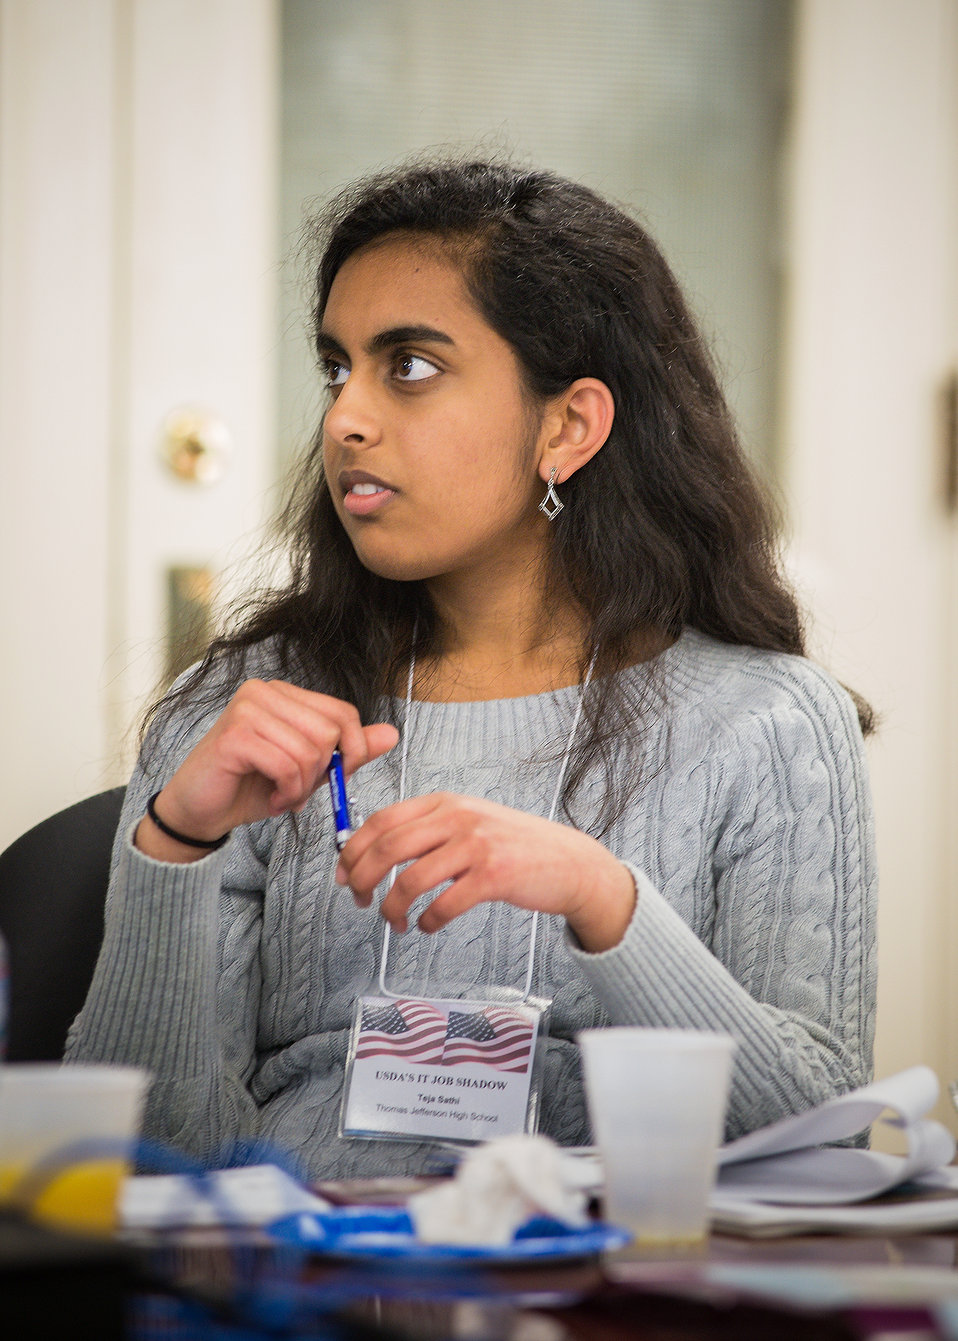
Teja Sathi, a student from Thomas Jefferson High School of Science and Technology in Alexandria, VA. listens to a speaker during the U.S. Department of Agriculture (USDA), Office of the Chief Information Officer (OCIO) IT Job Shadow Day, Tuesday, Mar. 25, 2014. The OCIO IT Job Shadow Day hosts students from local high schools in the Washington, D.C. area annually with IT professionals and agricultural specialists from a variety of mission areas at USDA.